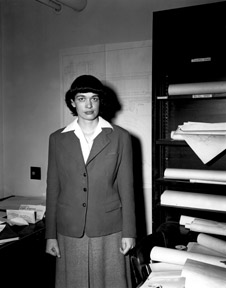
Leona Woods Marshall.